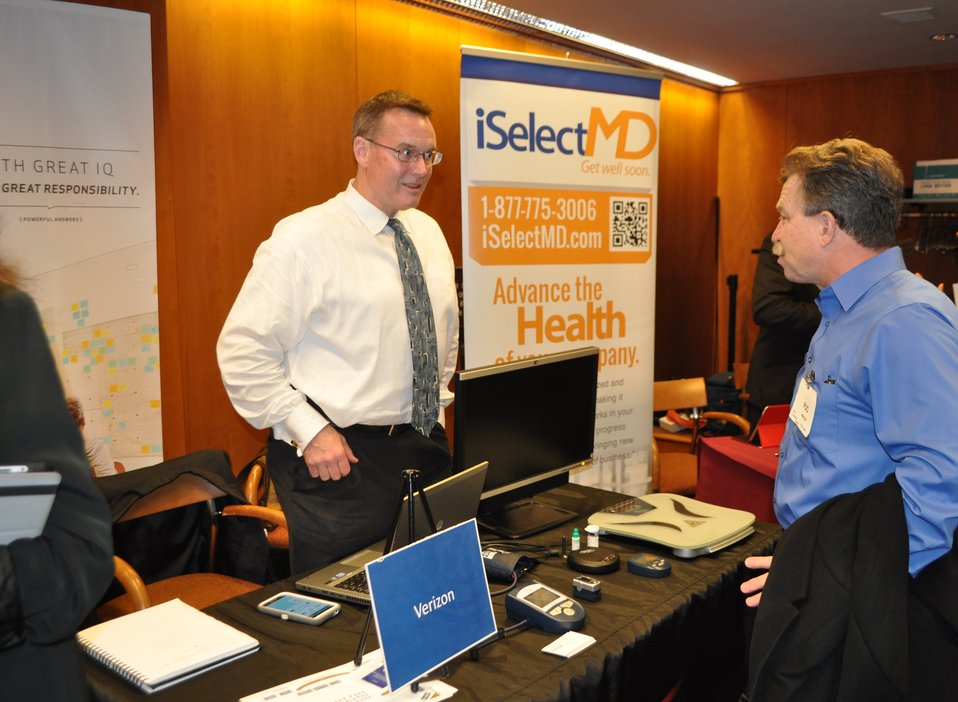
12.6.13 mHealth Innovation Expo

FCC mHealth Innovation Expo.